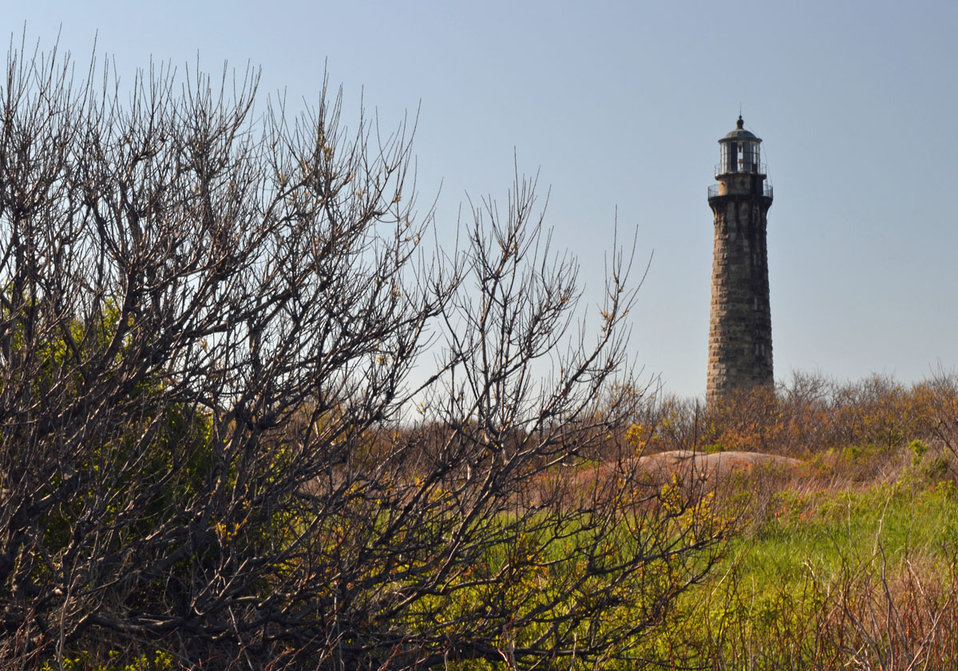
Framed tower

Thacher Island National Wildlife Refuge, MA.